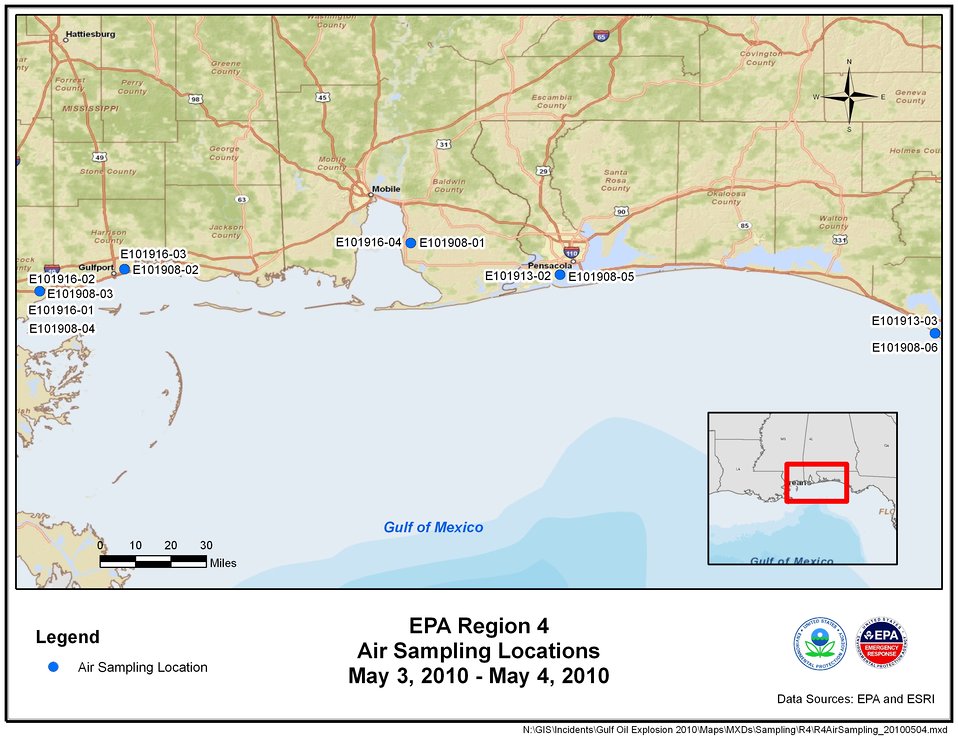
EPA Air Sampling Locations May 3-4, 2010